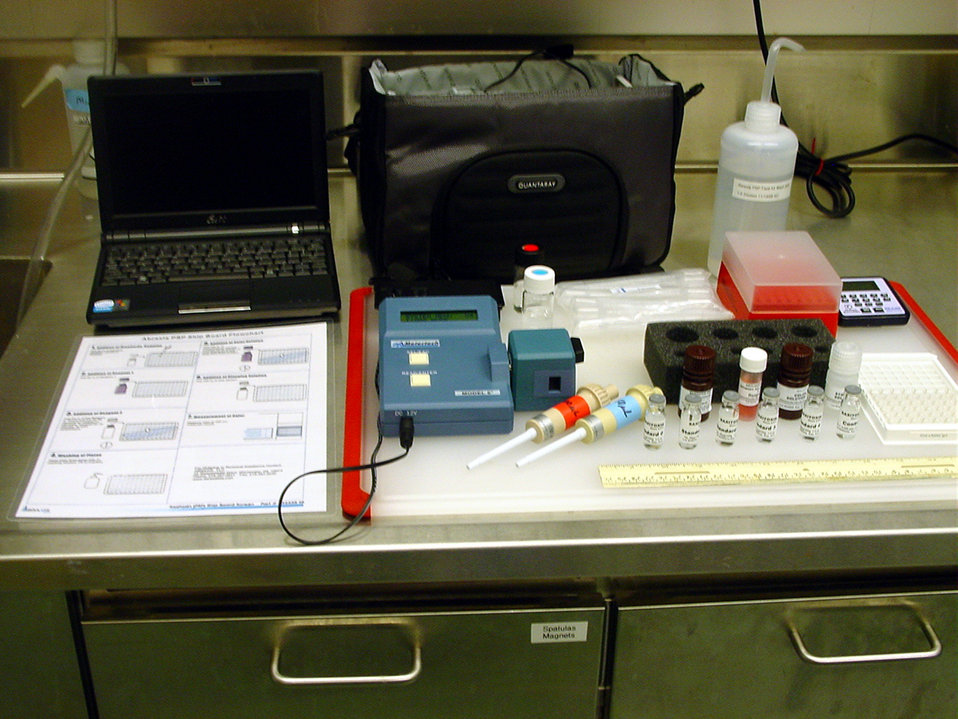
Clam Harvest: Testing at Sea

The field testing kit used by fishermen includes pipettes, sample wells and other materials needed to conduct on-board tests.

Fishermen trained by FDA scientists are performing sophisticated lab tests on clams while far out to sea -- a novel approach that has allowed the reopening of thousands of miles of ocean to clamming off the coast of New England.

• Novel Program Restarts Clam Harvest